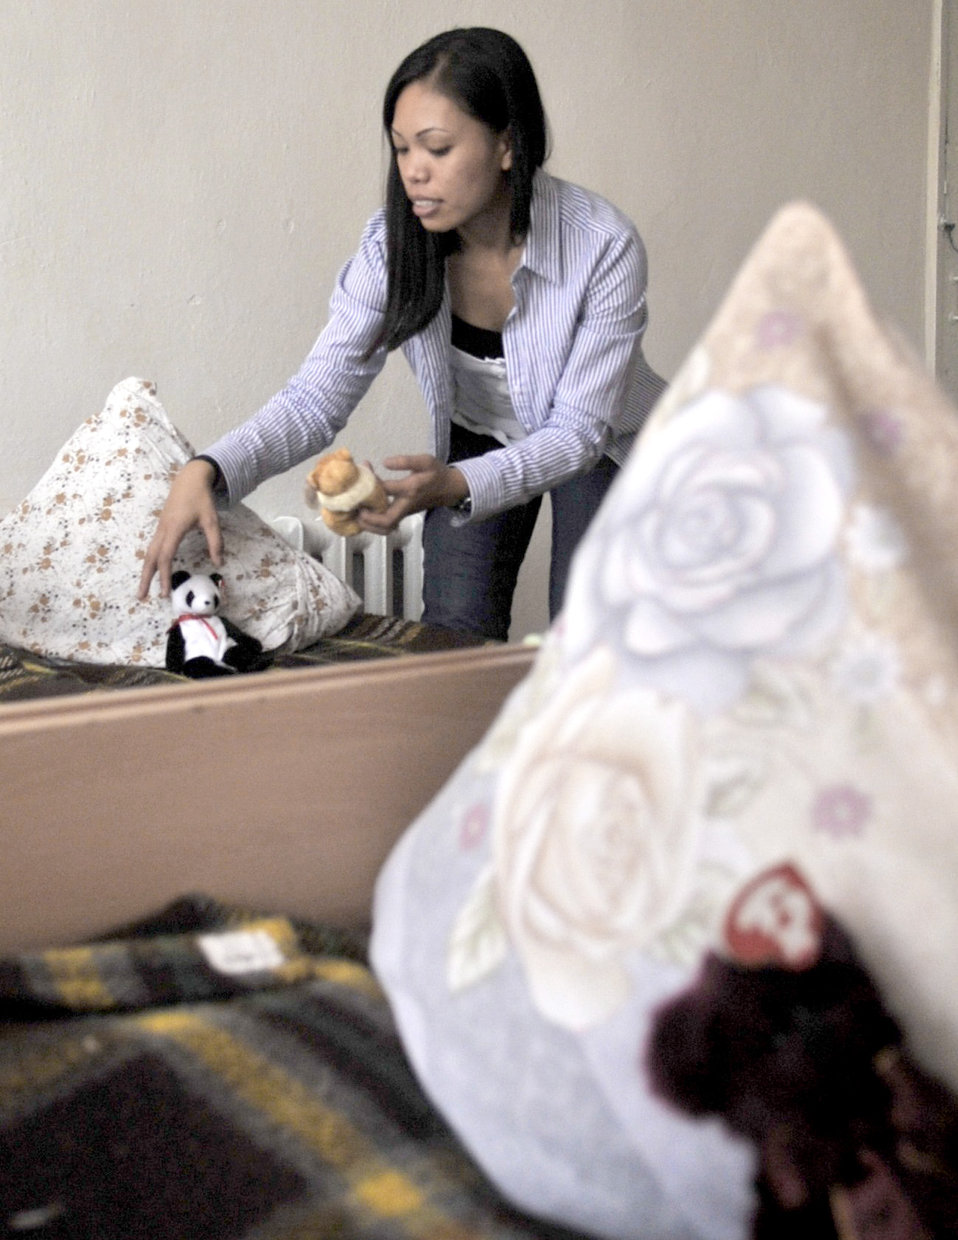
Kyrgyzstan school

1st Lt. Jennifer Lemque places stuffed toys on beds Oct. 18, 2010, at the Solnyshko school near Vasilievka, Kyrgyzstan. Several Airmen who are deployed to the Manas Transit Center, Kyrgyzstan, visited the school to deliver cold weather items and spend time with the kids.